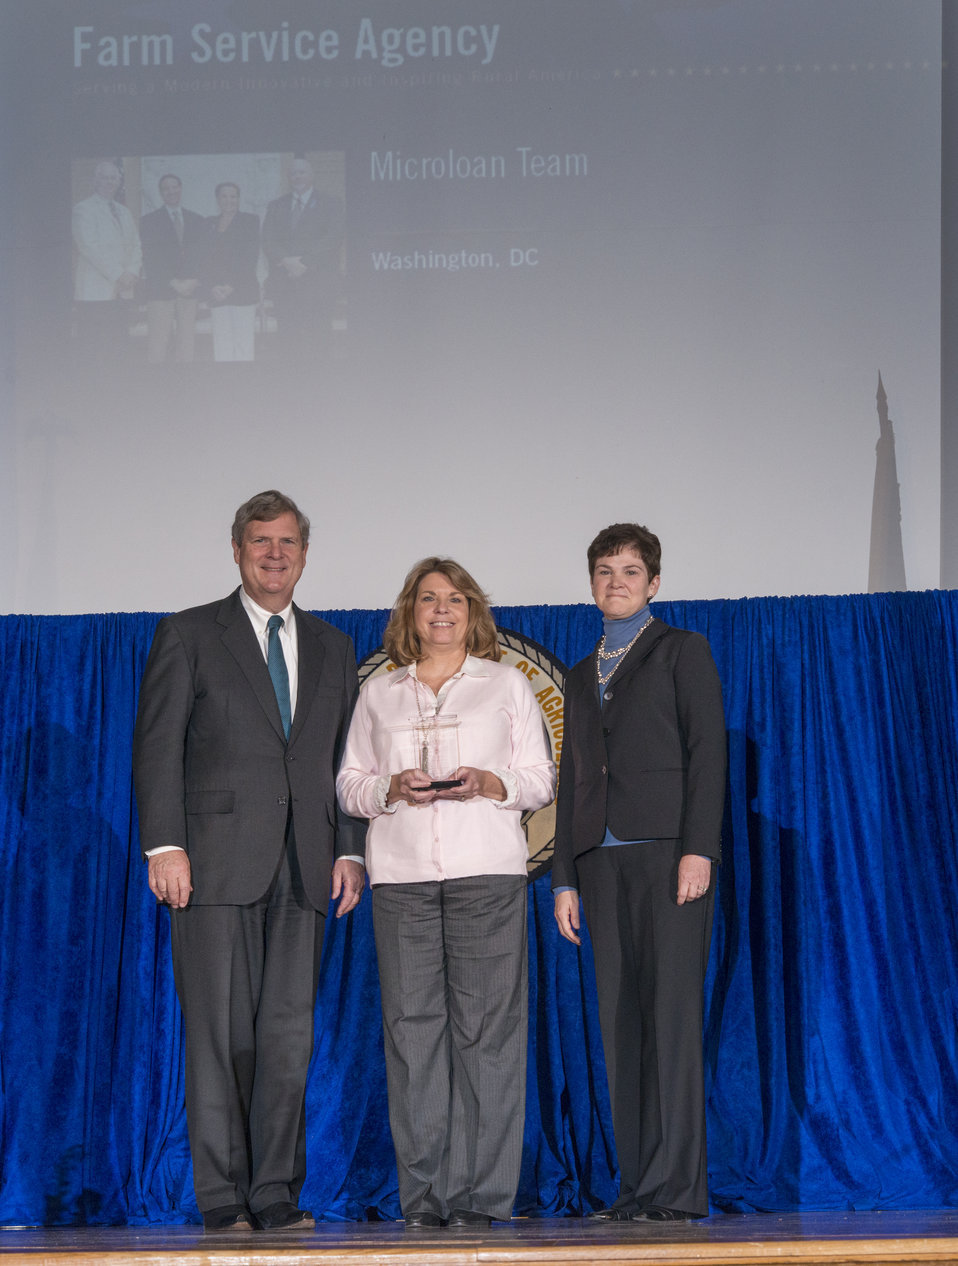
Agriculture Secretary Tom Vilsack and Agriculture Deputy Secretary Krysta Harden present the Secretary’s Honor Award to the Microloan Team, Farm Service Agency (FSA) in Washington, D.C. Group leader Connie Holman for developing the Microloan Program, which expands the availability of agricultural credit for small farm operators including beginning farmers, veterans, and disadvantaged producers at the 2013 Secretary's Honor Awards in the Jefferson Auditorium at the U.S. Department of Agriculture (USDA) in Washington, D.C. on Wednesday, Dec. 11, 2013.